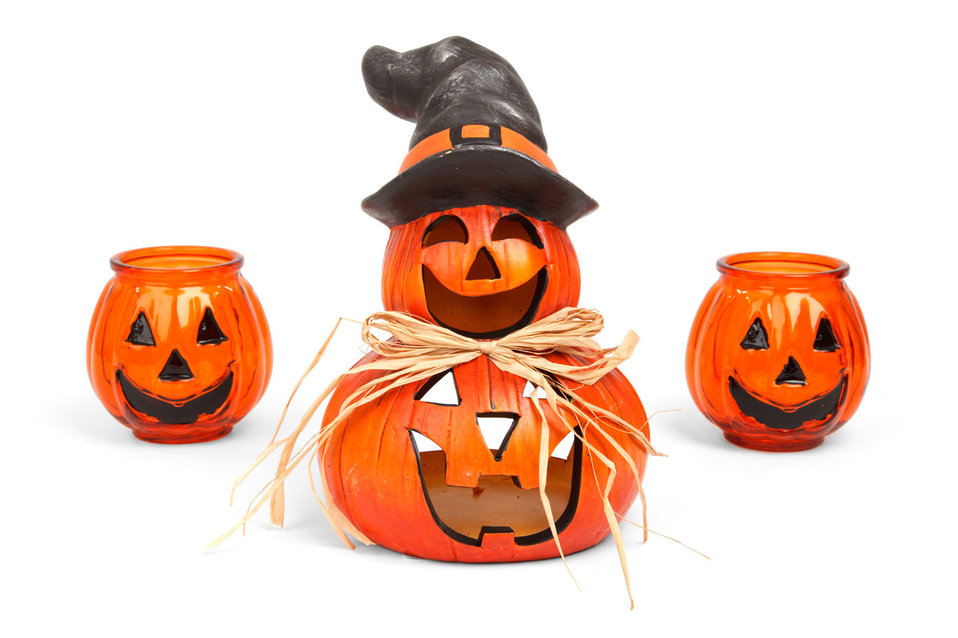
Halloween decoration isolated

Funny halloween candle holders isolated on white background.